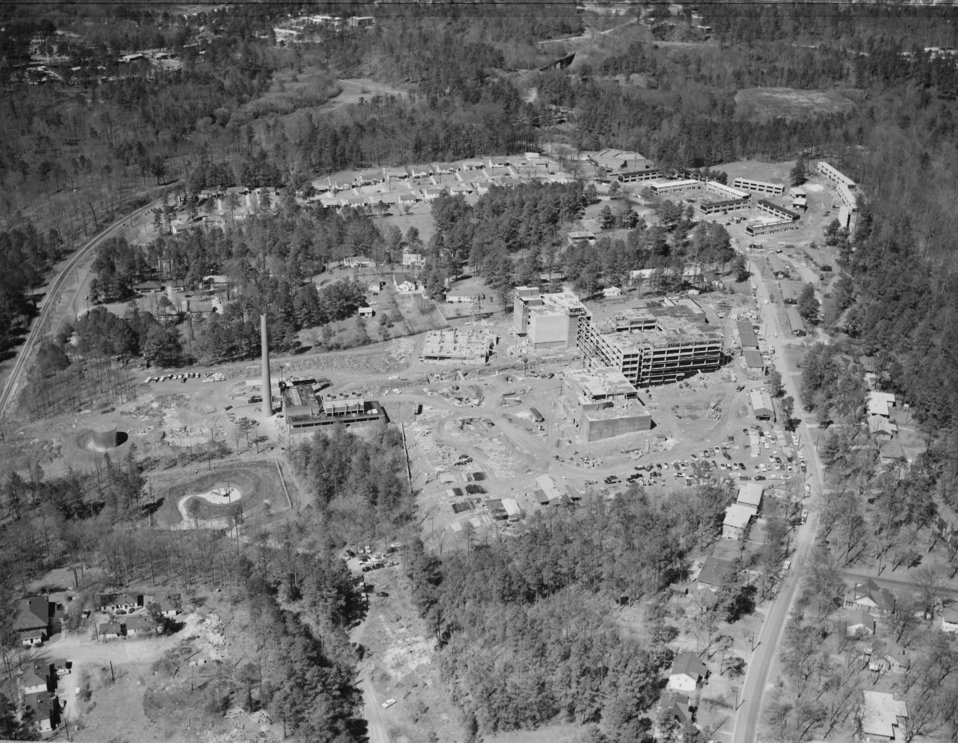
An aerial view (facing west) of the CDC, Clifton Road, Atlanta, GA. campus under construction in 1959.